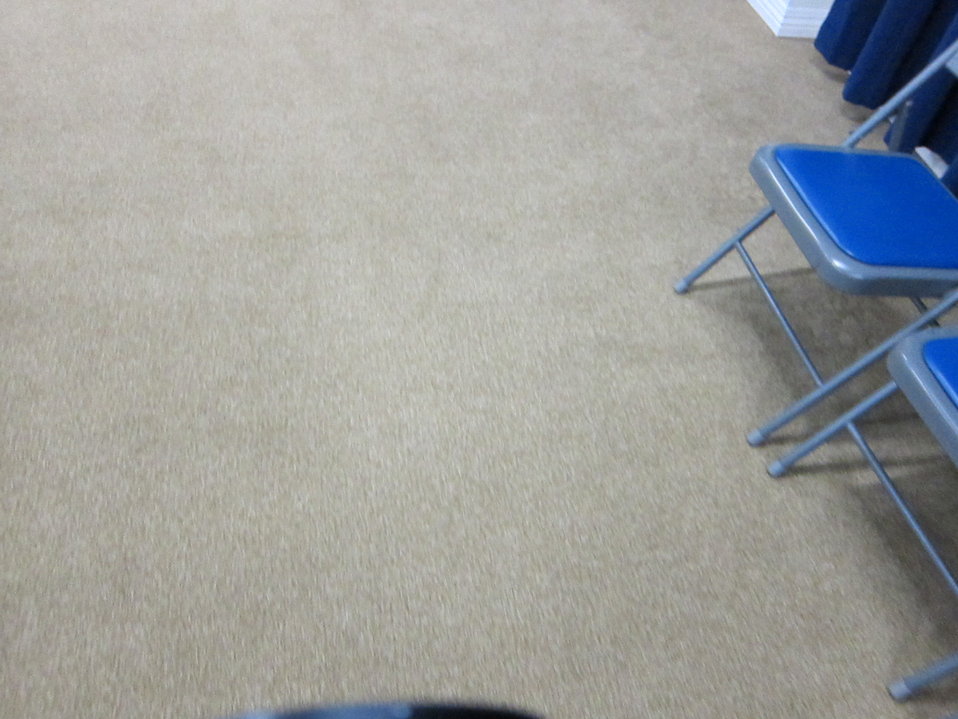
WH 2012 World Hepatitis Day Event